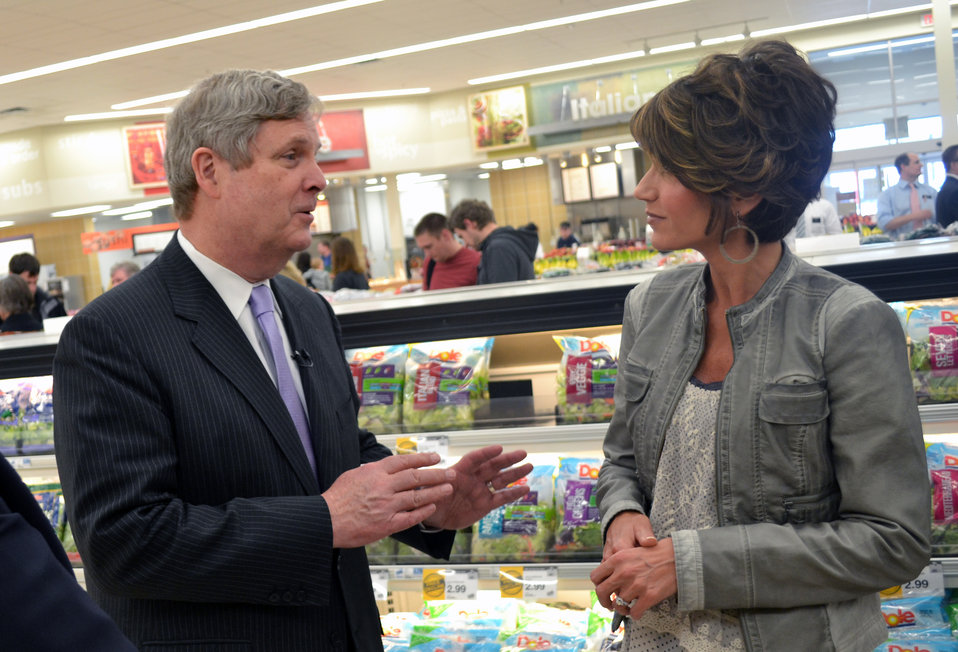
Agriculture Secretary Tom Vilsack talks with Congresswoman Kristi Noem dueing the visit to a Hy-Vee grocery store in Sioux Falls, South Dakota to discuss USDA efforts to promote fruit and vegetable consumption, improve childhood nutrition and prevent obesity to raise a healthier generation of Americans. He announced the results of a pilot program aimed at increasing fruit and vegetable consumption in America’s poorest schools.